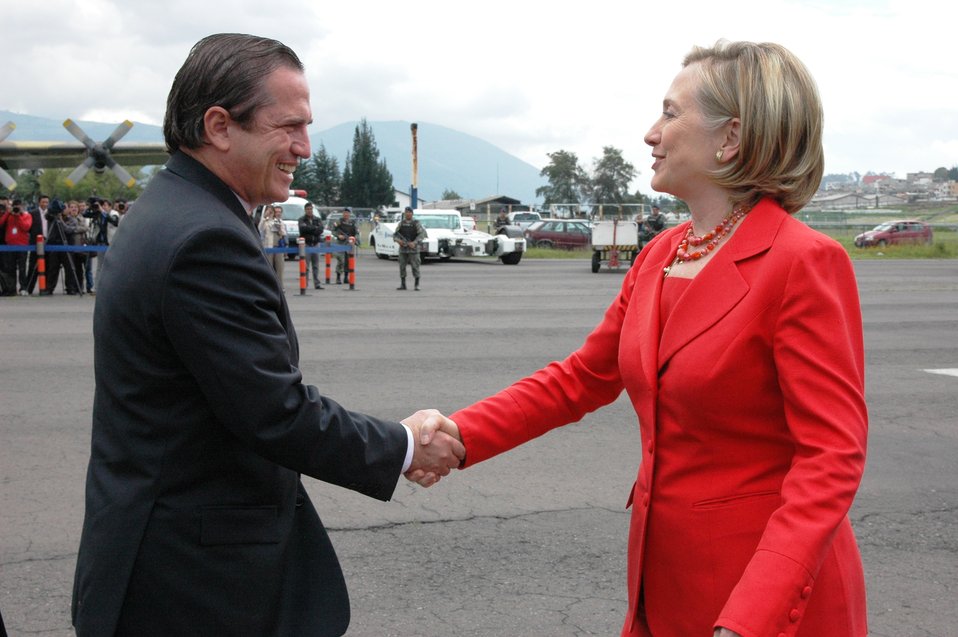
Secretary Clinton Is Greeted By Ecuadorian Foreign Minister Ricardo Patiño

U.S. Secretary of State Hillary Rodham Clinton is greeted by Ecuadorian Foreign Minister Ricardo Patiño in Quito, Ecuador, on June 8, 2010.